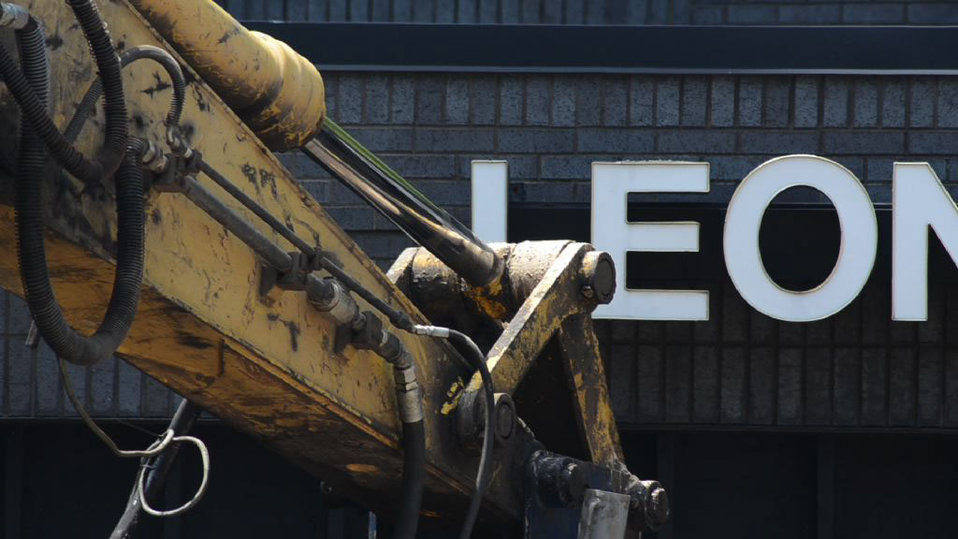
Above ground construction phase of Pikeville Medical Center (PMC) expansion project, on Tuesday, July 12, 2011, in Pikeville, KY. After months of infrastructure construction and rain delays, one of Kentucky’s largest American Recovery and Reinvestment Act (ARRA) projects is under way. The $44.6 million Community Facilities Loan will finance construction of a new medical office building and parking garage.